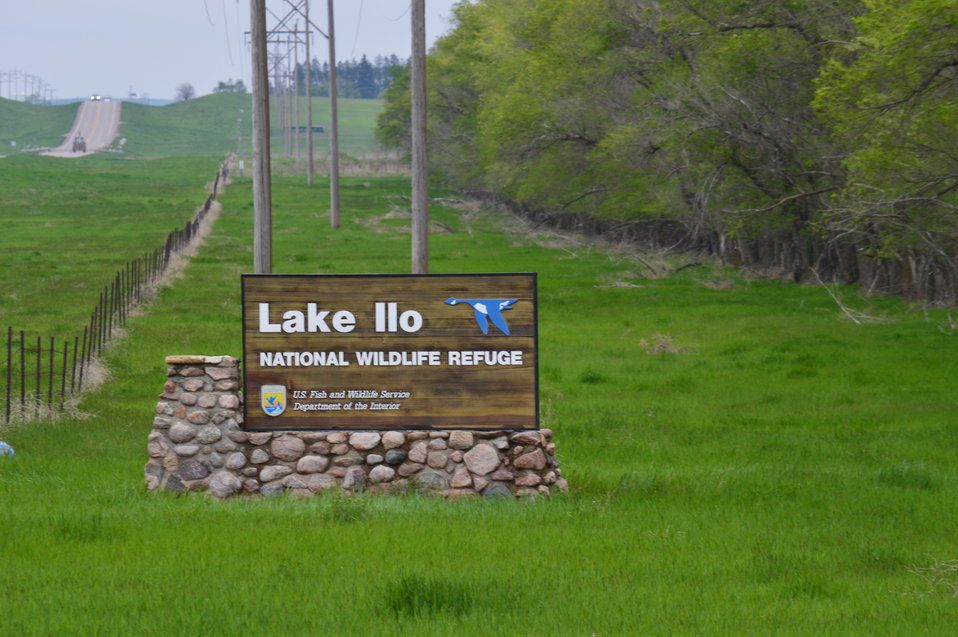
Close-up of Lake Ilo NWR sign